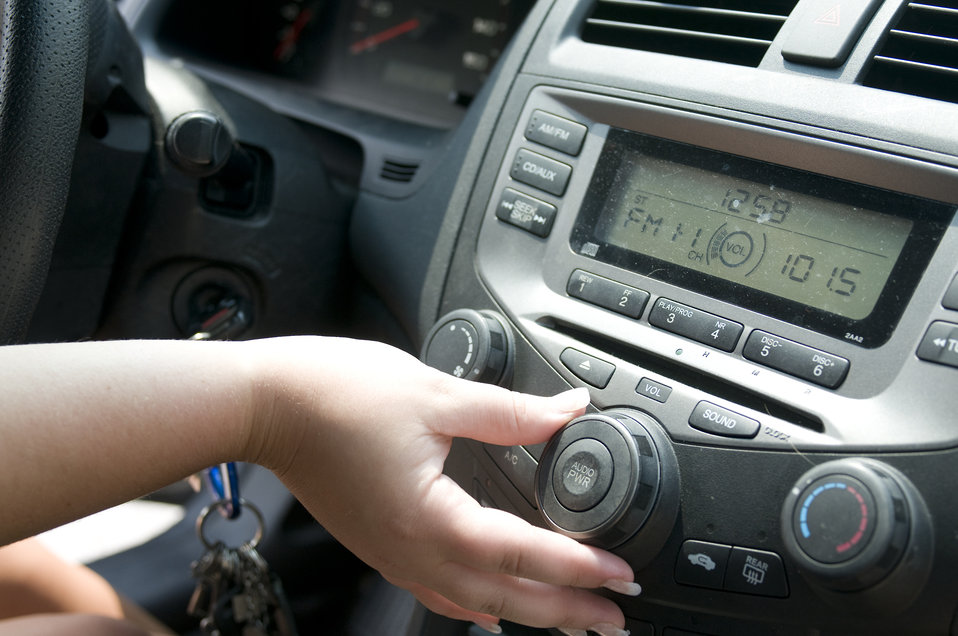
This image depicts the hand of a teenage female driver adjusting the volume of her car radio, while seated behind the wheel of her automobile. Note that the keys were hanging from the ignition switch. Adjusting the radio volume while driving, though quite permissible, is not the safest time to be manipulating these controls. One should make all comfort adjustments to a vehicle before beginning a trip, while having to interact with other divers, and impediments to to driving experience.